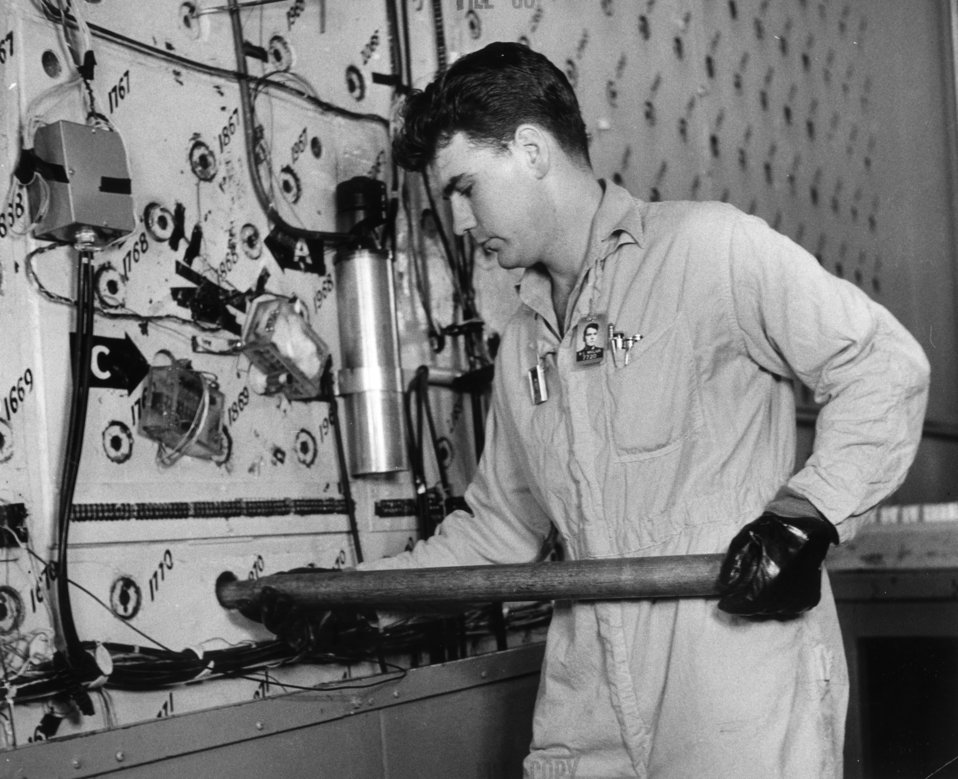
Loading Face Graphite Reactor ORNL

7770-35 DOE Photo J.P. Tarver 2-13-1952 Oak Ridge Tennessee